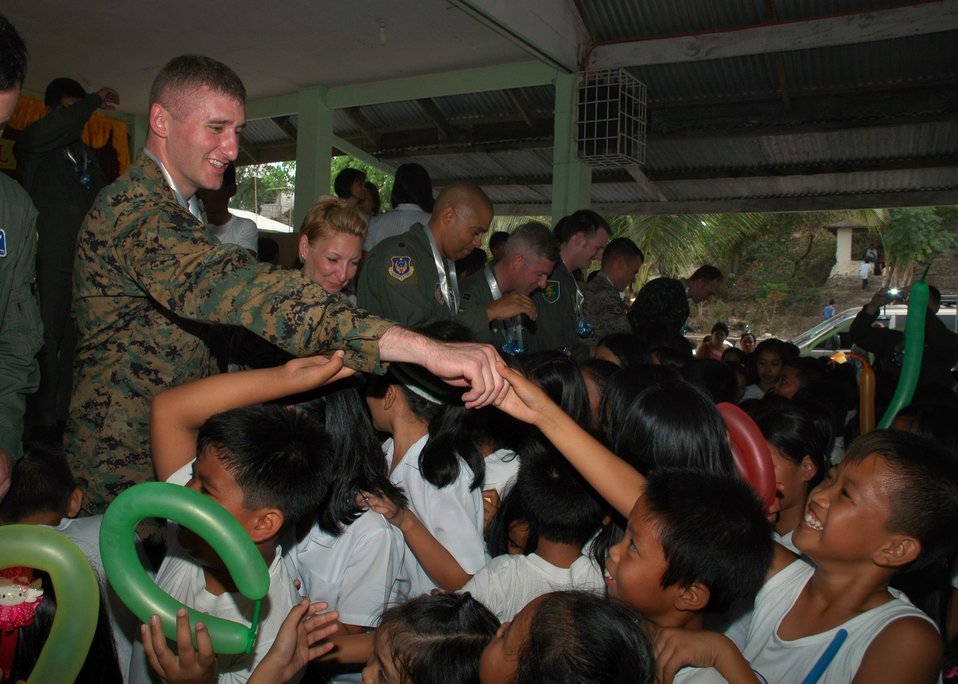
U.S., Philippine servicemembers visit school children

Marine Corps 2nd Lt. Scott Sasser joins other U.S. servicemembers in greeting students during a community relations visit at Sapang Bato Elementary School in Angeles City, Philippines.